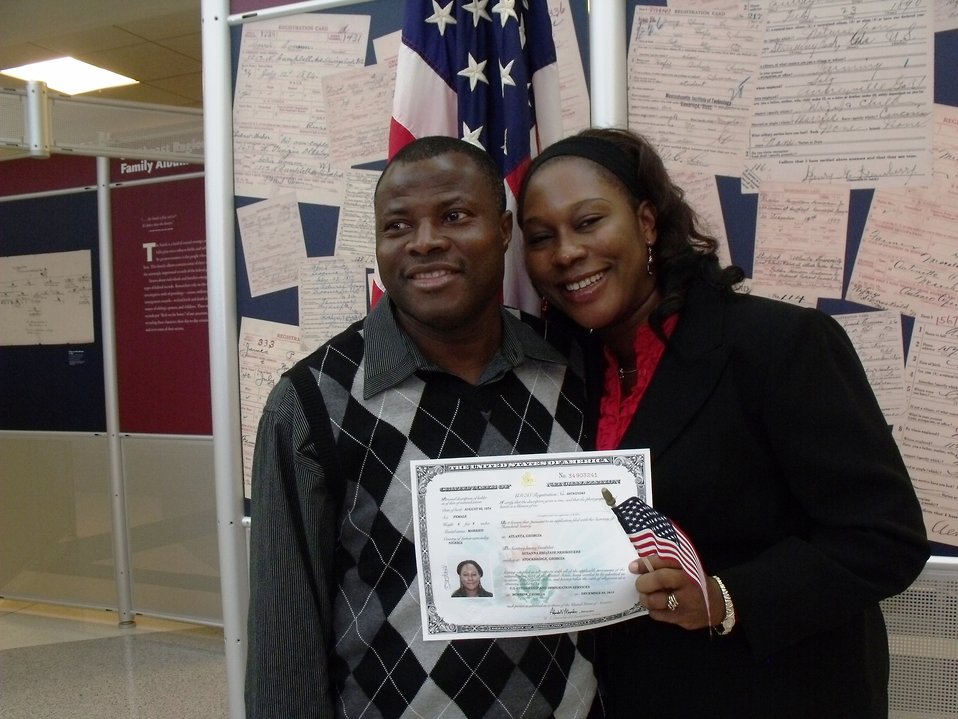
New Citizens